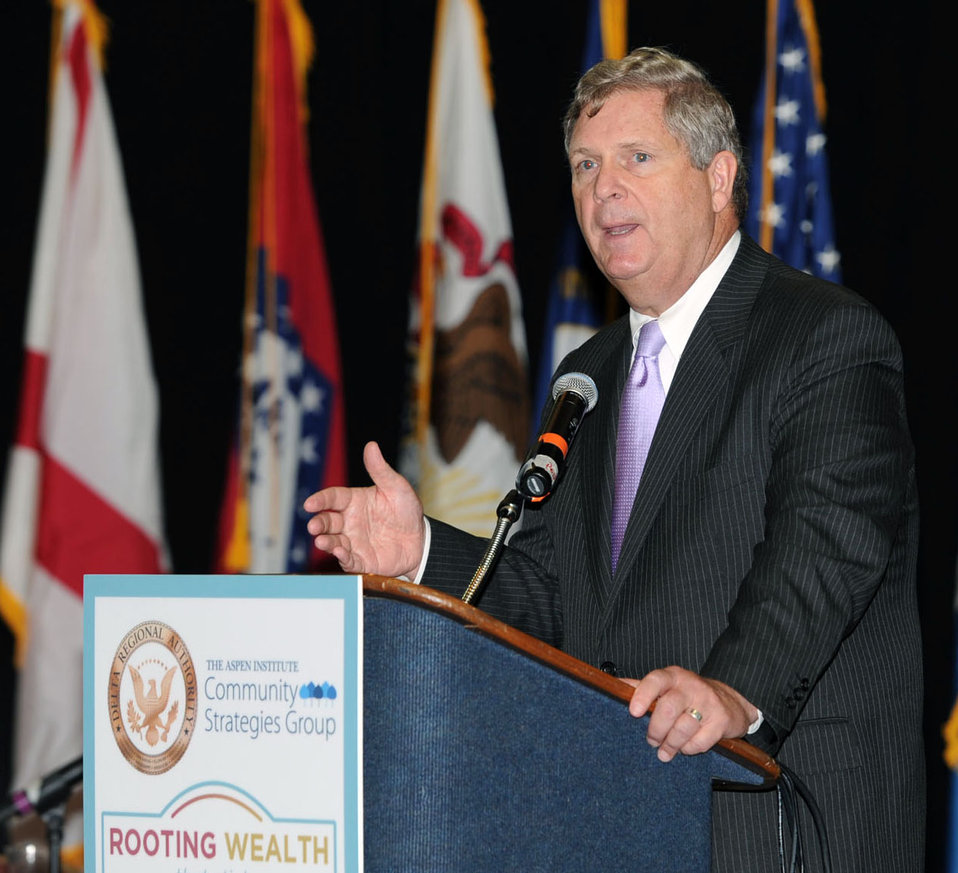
Agriculture Secretary Tom Vilsack speaking at Rooting Wealth that Sticks Regional Forum at the Statehouse Convention Center in Little Rock, AR on Wednesday, Oct. 30, 2013. The Aspen Institute Community Strategies Group and the Delta Regional Authority were the co-conveners of this forum. The Aspen Institute Community Strategies Group energizes and prepares people, organizations and collaborative to do the best for the communities and regions. The Delta Regional Authority works to improve life for the 10 million people who reside in the 252 Delta counties and parishes in parts of eight states.